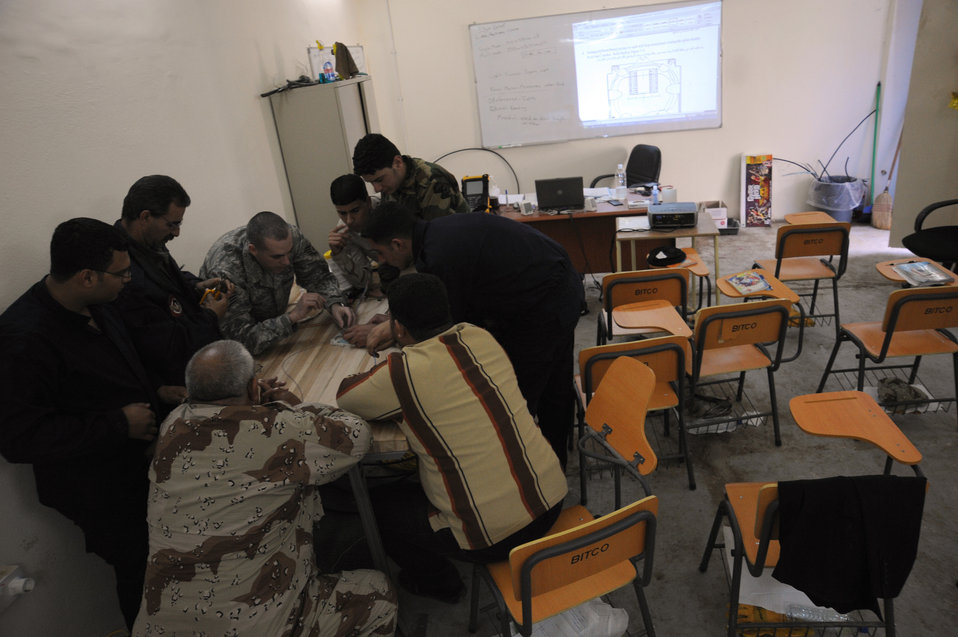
Fiber optics course

Staff Sgt. Gary Graf, an 821st Expeditionary Training Squadron cable and antenna maintenance instructor at Camp Taji, Iraq, gathers his students around a table as he demonstrates some of the characteristics of fiber optics Feb. 13, 2010. During the 42-day a fiber optics maintenance course, Iraqi military students learn about theories, splicing cable and the improved capabilities that fiber optics can bring. Sergeant Graf is deployed to the 821st ETS from Sheppard Air Force Base, Texas.